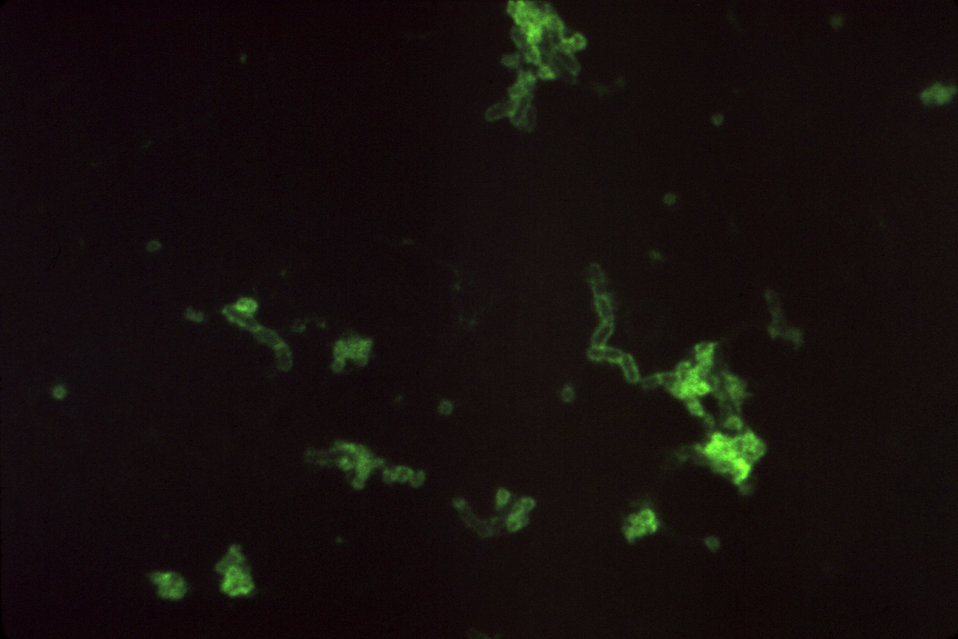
This micrograph depicts Yersinia pestis bacteria using Direct Fluorescent Antibody Stain (DFA); Magnified 98x.